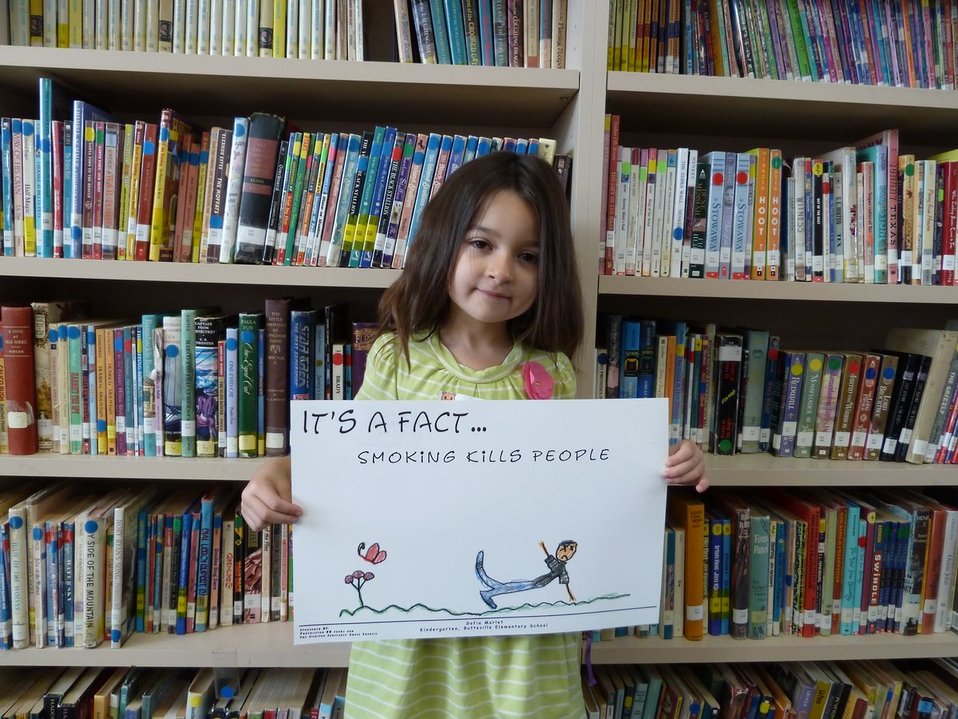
Siskiyou County, CA Drug Facts Week Photos

Sophia Morlet, kindergartener from Butteville Elementary School displaying her winning entry in the “It’s a Fact” poster contest in Siskiyou County.